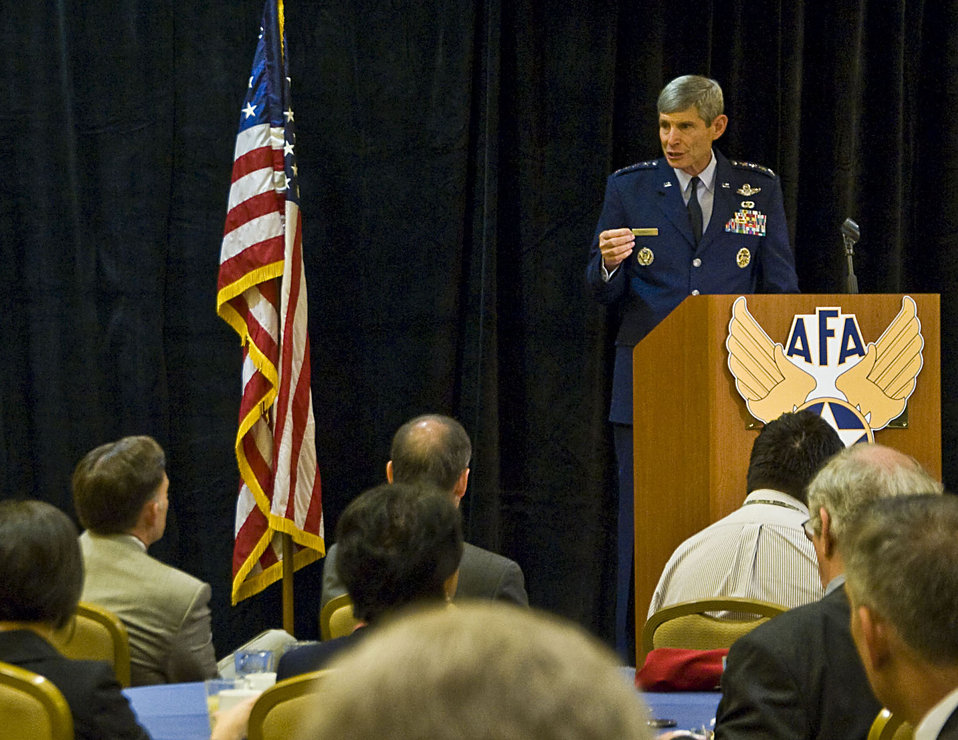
CSAF: Balance required to avoid a ‘hollow force’

Air Force Chief of Staff Gen. Norton A. Schwartz speaks to guests about rebalancing the total force during an Air Force Association monthly breakfast in Arlington, Va., June 11, 2012. The Air Force Association's breakfast program is a monthly series that provides a venue for senior Air Force and Department of Defense leaders to communicate directly with the public and the press.